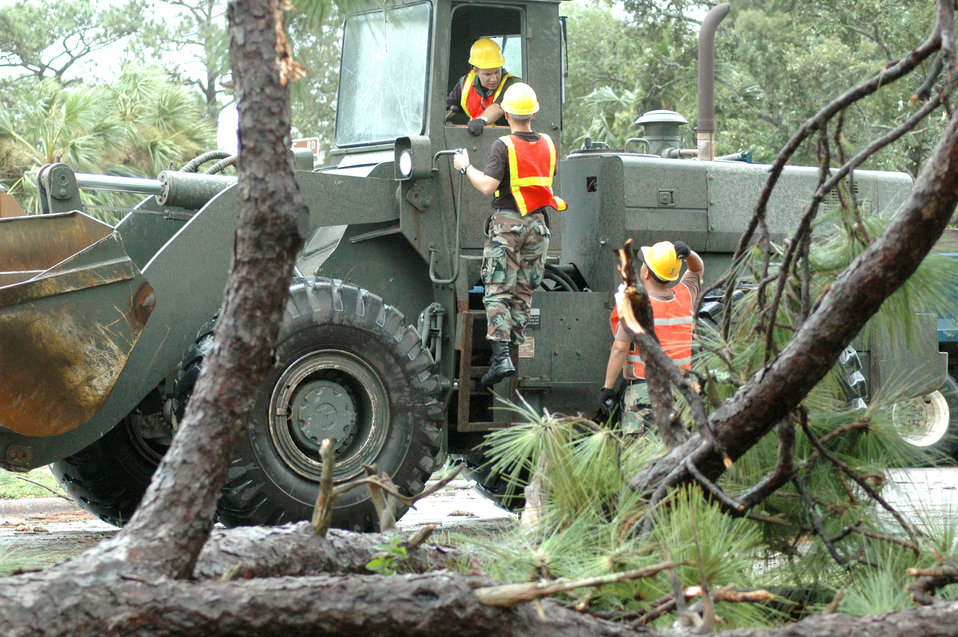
Eglin spared as Hurricane Dennis flexes

EGLIN AIR FORCE BASE, Fla. -- Senior Airman Shaun Cox (seated) lays out a plan with Airman 1st Class Brian Mikua and Senior Airman Michael Rambaran (far right) July 10 to clean up debris left here by Hurricane Dennis. The Airmen are assigned to the 796th Civil Engineer Squadron.